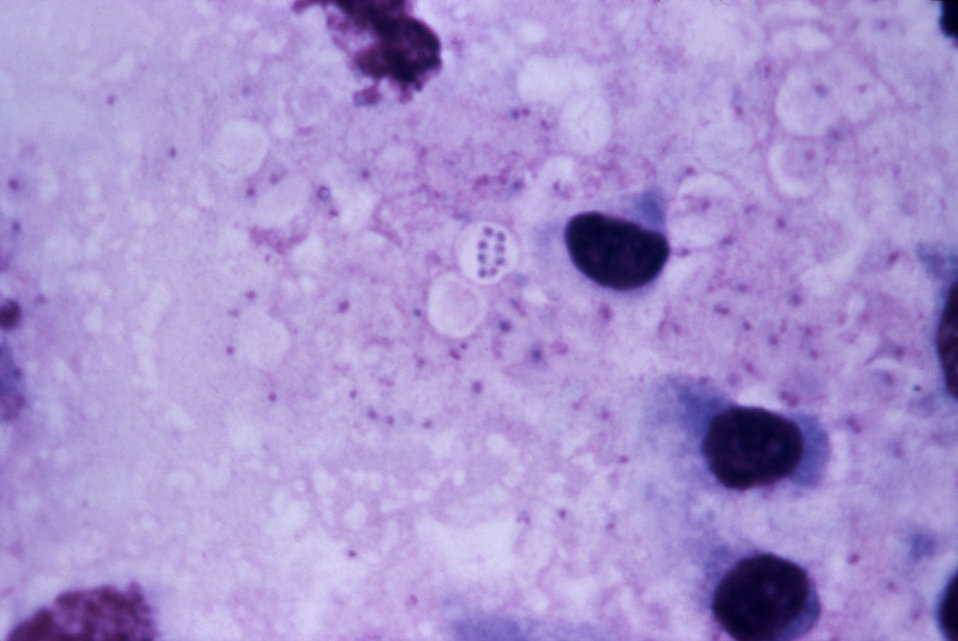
This is a micrograph of a mediastinal lymph node from a cynomolgus monkey, Macaca fascicularis with inhalation anthrax.